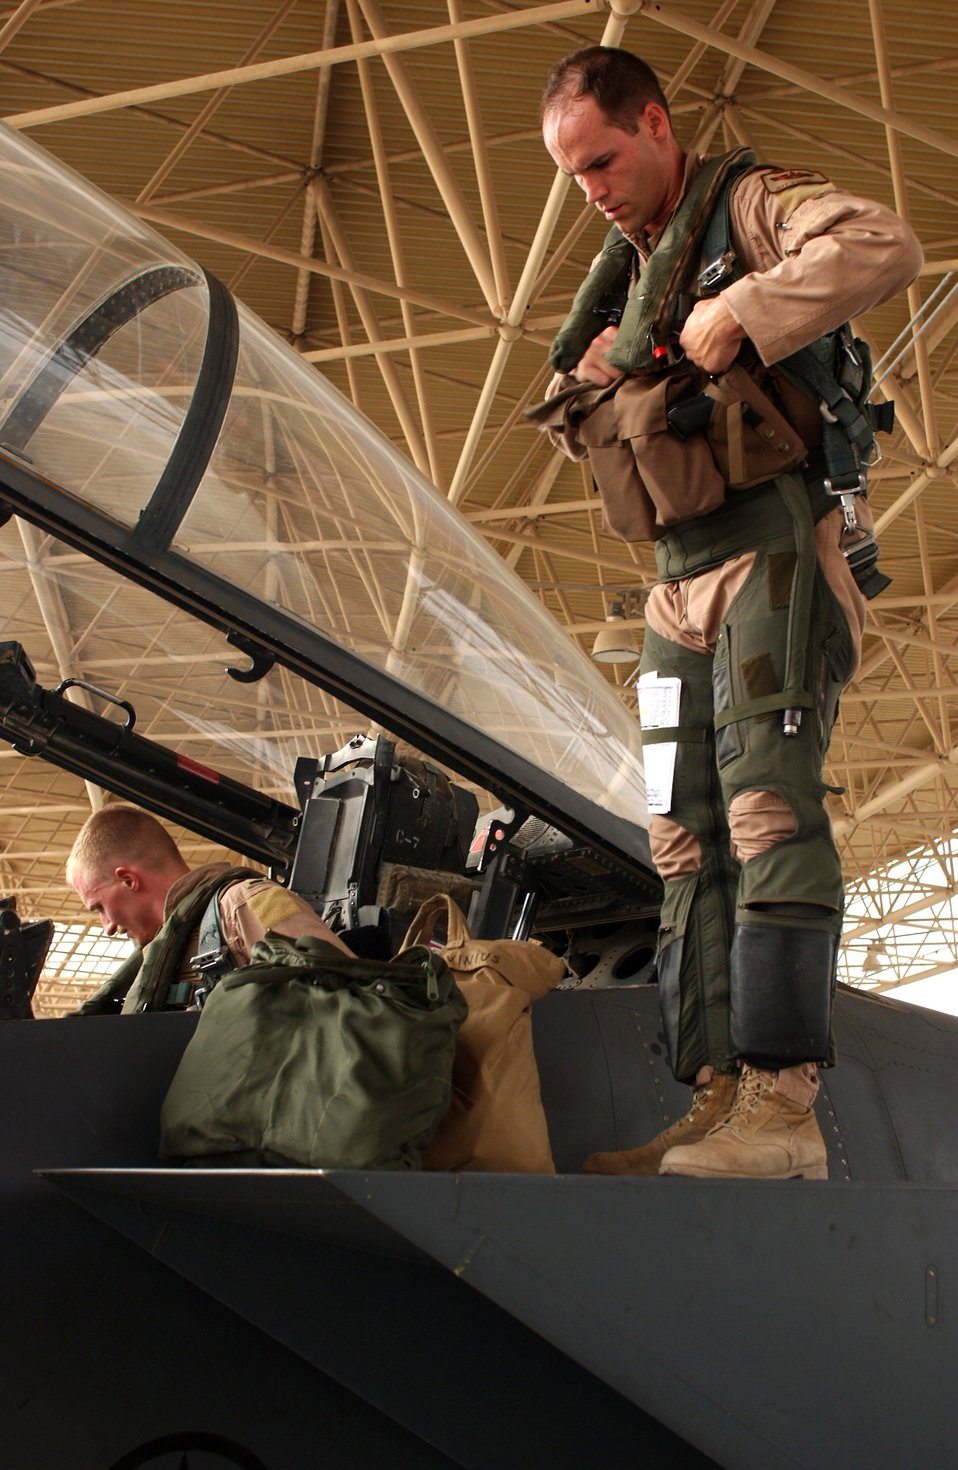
Combat mission

Maj. Jeff O'Donnell prepares to climb into the cockpit of his F-15E Strike Eagle while 1st Lt. Nathan Rivinius straps in before a combat mission from a forward operating base in Southwest Asia Aug. 18. Major O'Donnell is a pilot and Lieutenant Rivinius is a weapons systems officer. They are deployed to the 335th Expeditionary Fighter Squadron from Seymour Johnson Air Force Base, N.C.